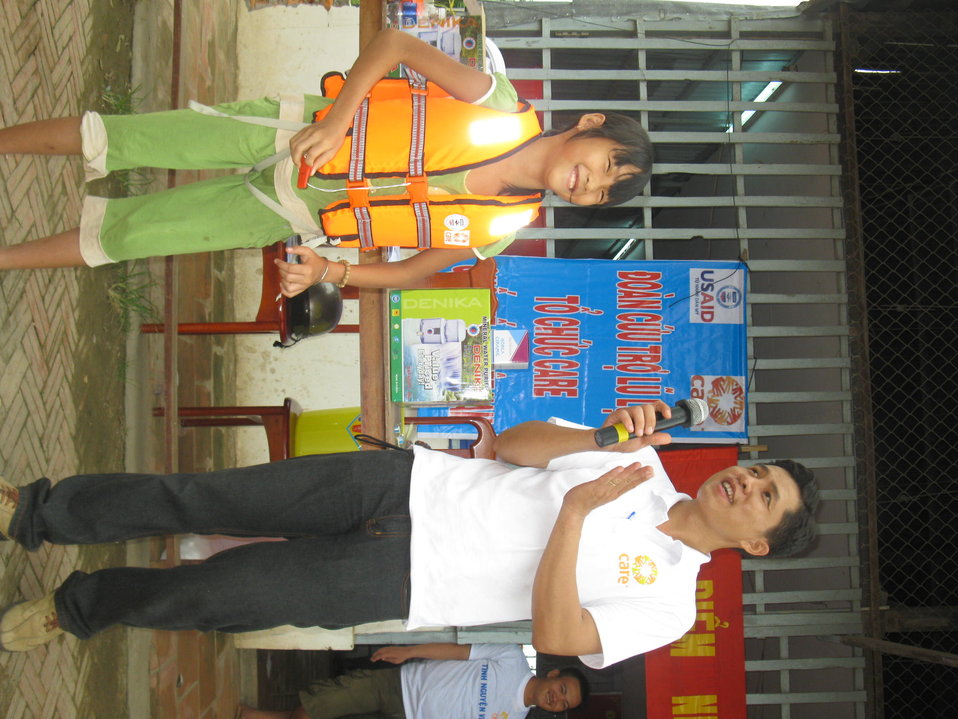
USAID Relief distribution in Giang An Province

November 8, 2011